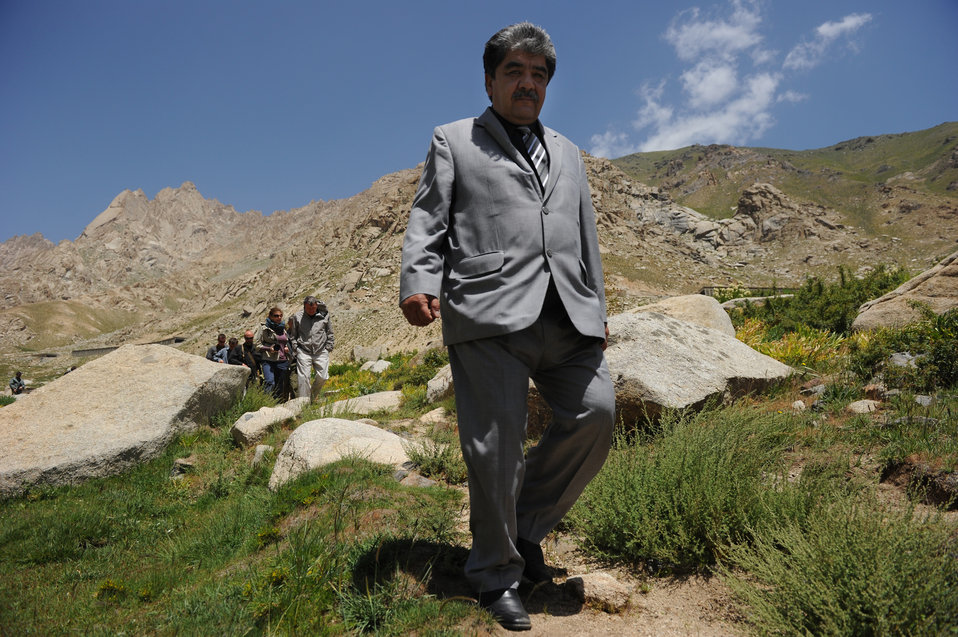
Minister of Public Works Abdul Qudos Niman Hamidi arrives near the South end of the Salang Tunnel to mark the beginning of renovations of the tunnel at the border of Parwan and Baghlan Provinces, Afghanistan, on Wednesday, June 15, 2011. (S.K.Vemmer/Department of State)